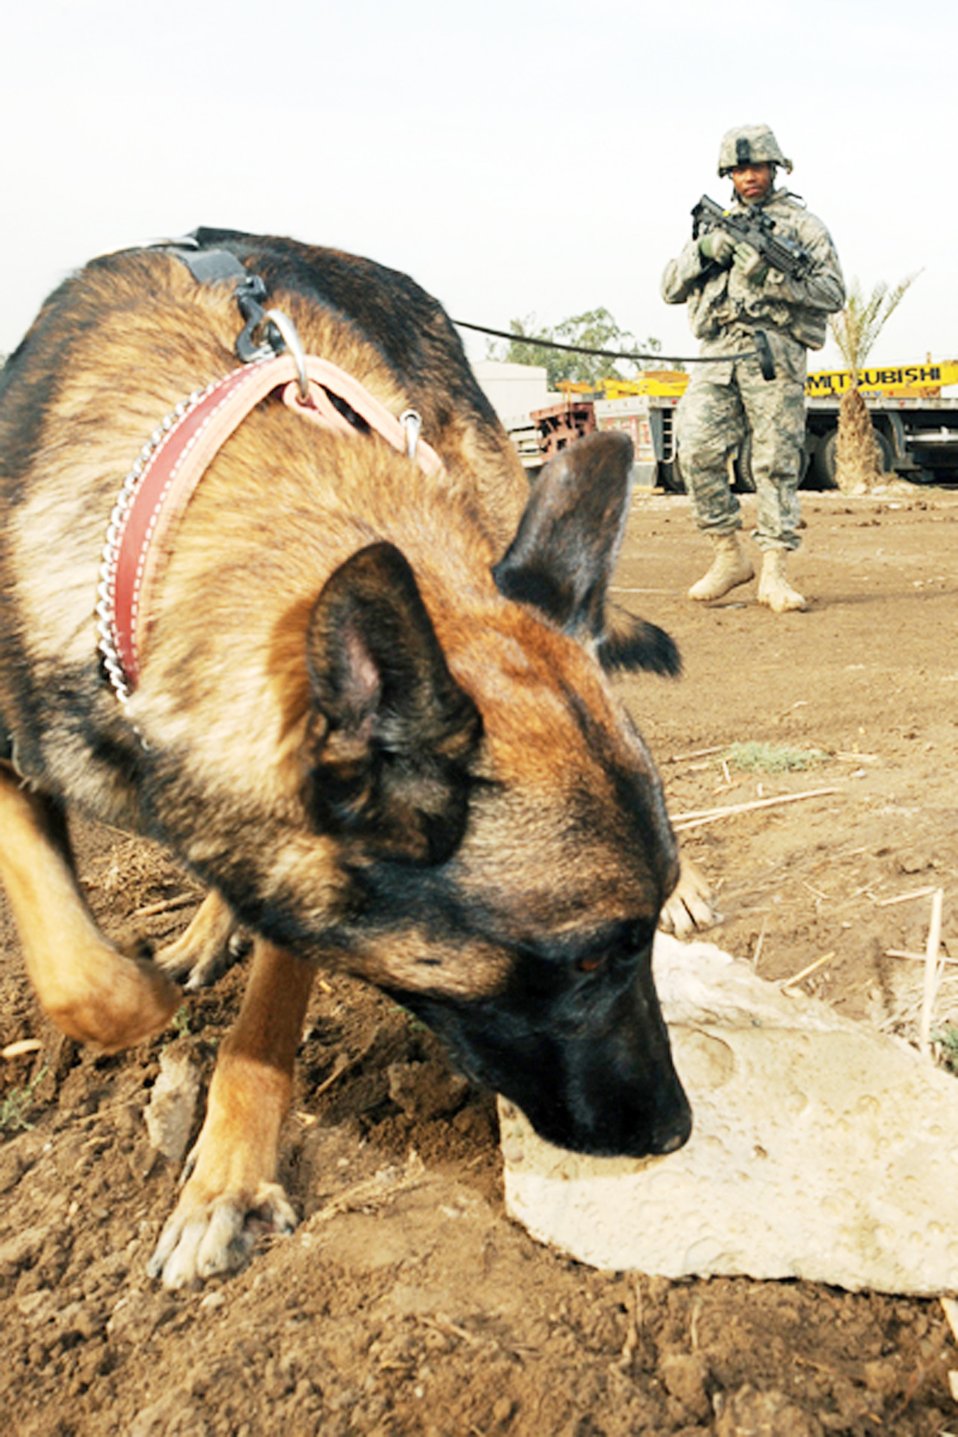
Where's my treat?

Senior Airman Mark Bush, military working dog handler assigned to Multinational Division Baghdad - Iraq, and Chukky search for explosives during a training session Oct. 28, 2009, at Camp Victory, Iraq. The pair trains regularly to maintain their proficiency in locating explosives. Airman Bush and Chukky are deployed from Nellis Air Force Base, Nev.